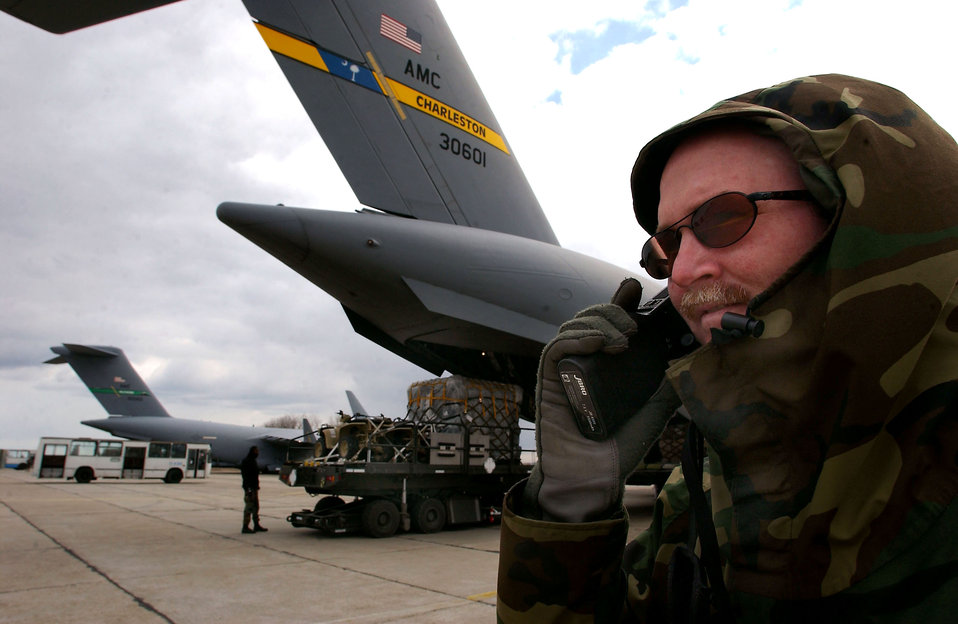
Staten

CONSTANTA, Romania -- Lt. Col Greg Staten, commander of the 349th Tanker Airlift Control Element, oversees the unloading of C-17 Globemaster IIIs from Charleston Air Force Base, S.C., and McChord AFB, Wash., on March 19. Operating 24 hours a day, the TALCE is key to maintaining troop and equipment movement for the Operation Iraqi Freedom air bridge.